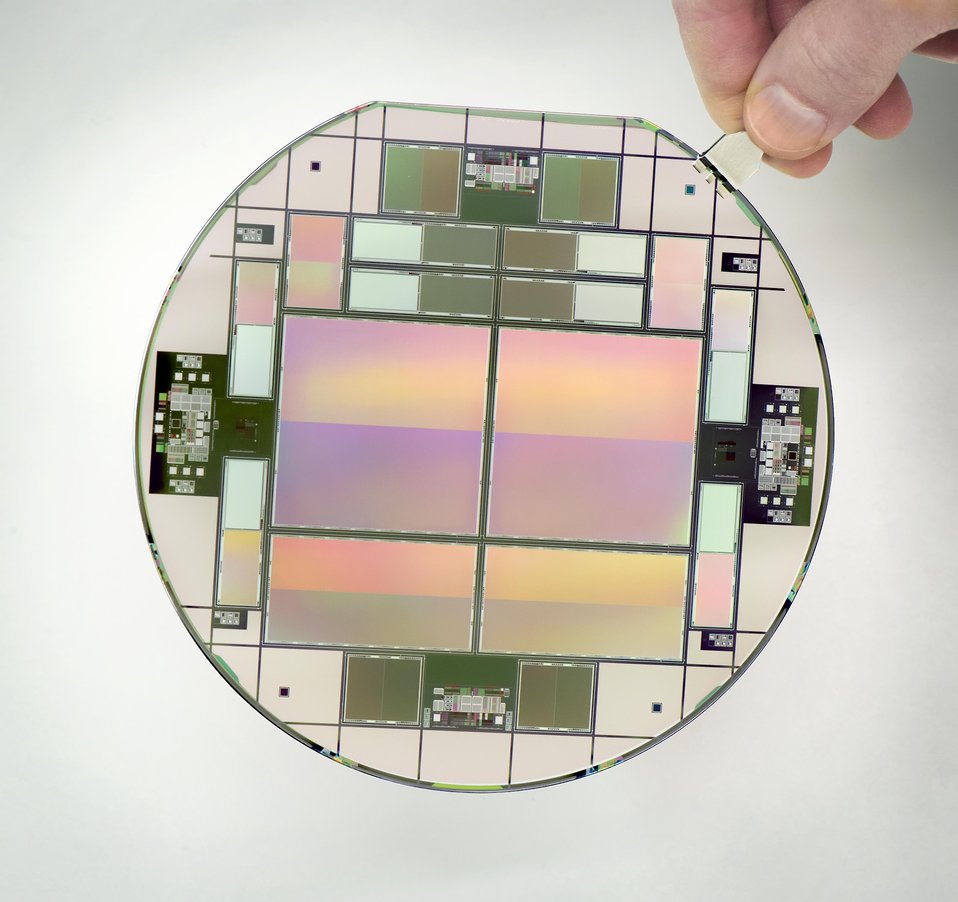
Charge-Coupled Device (CCD) wafer at Lawrence Berkeley National Laboratory.